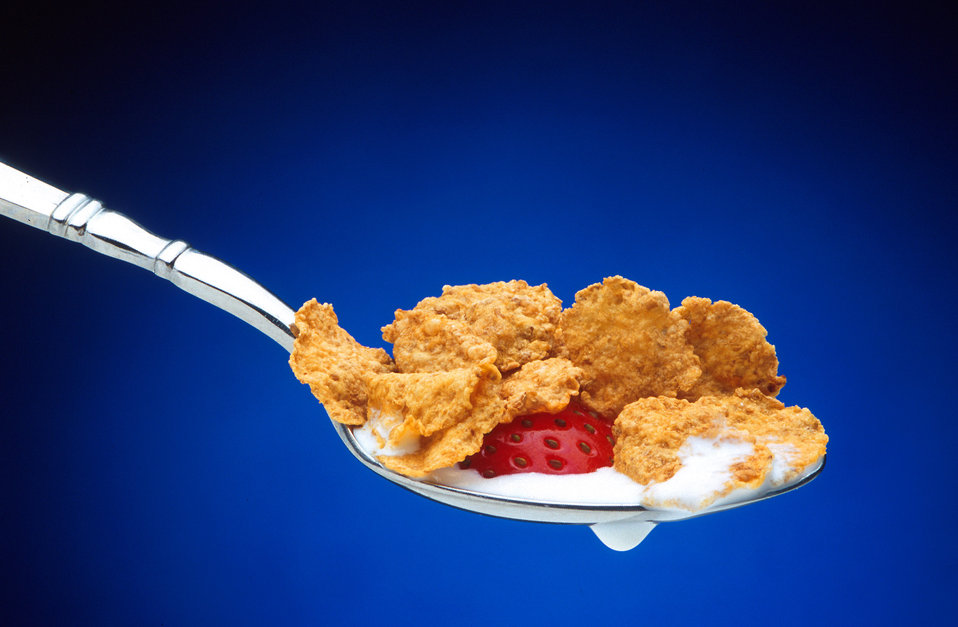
Cereals can be rich in vitamin B12.